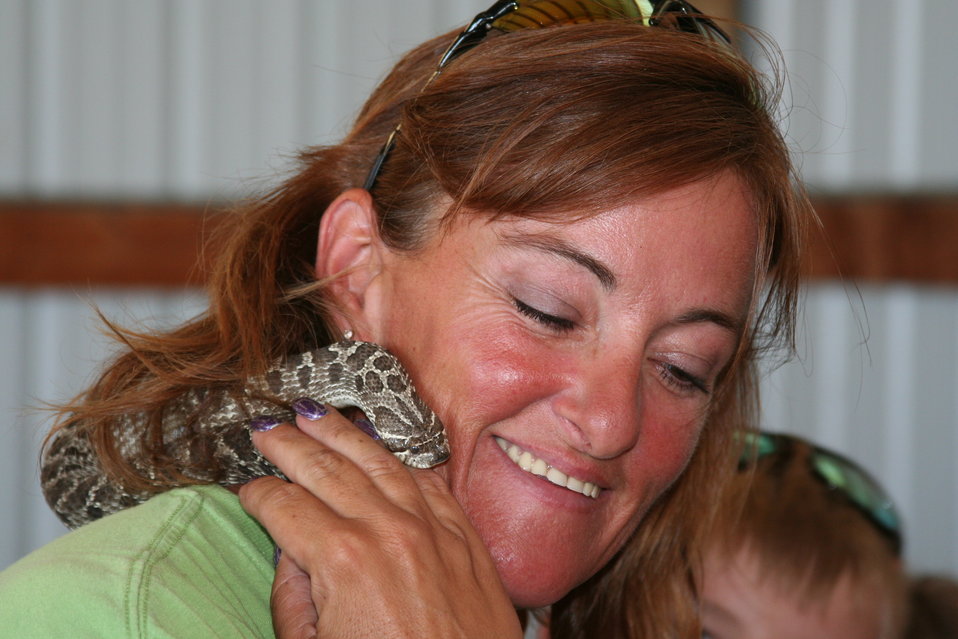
2011 Huron Prairie Fest